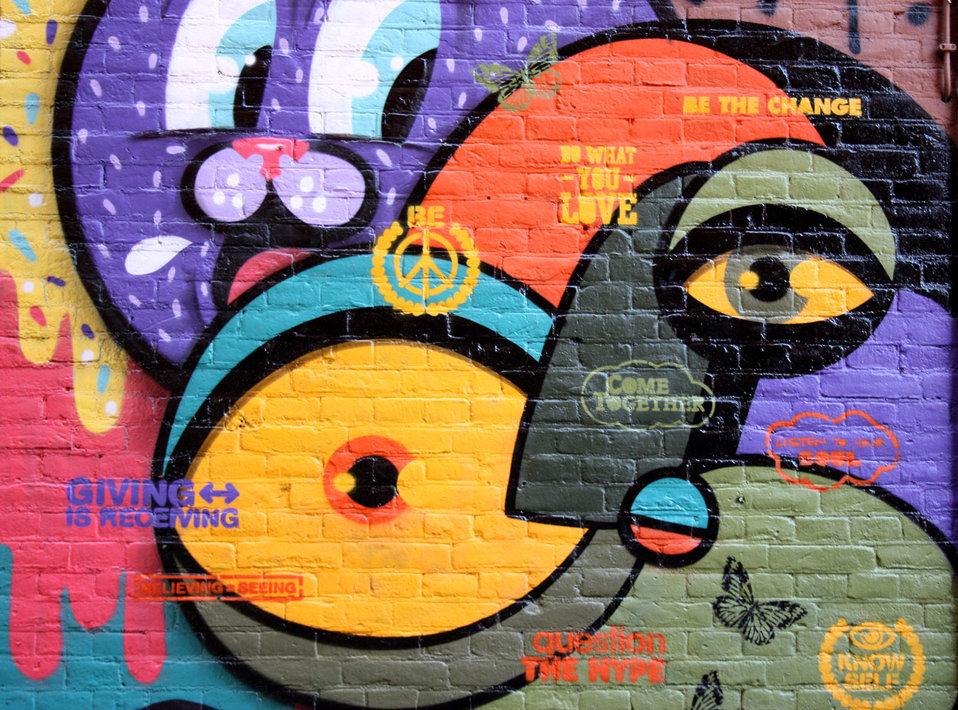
Amsterdam graffiti

Cool graffiti on a street wall.